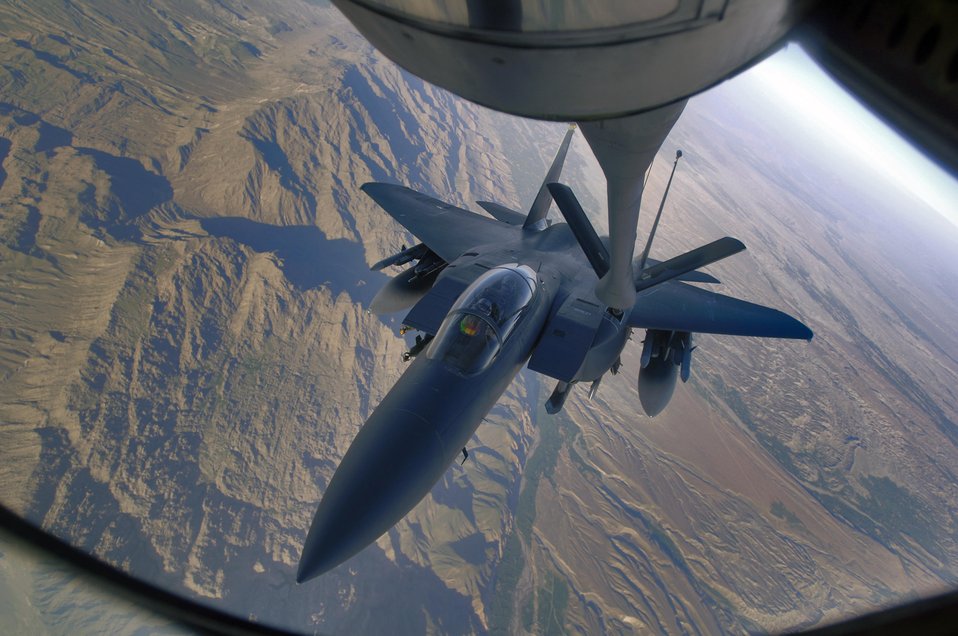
Aug. 30 airpower summary: F-15s deter enemy attack

An F-15E Strike Eagle refuels over the mountains of Afghanistan April 12, 2006. The Strike Eagle is a dual-role fighter designed to perform air-to-air and air-to-ground missions. An array of avionics and electronics systems gives the F-15E the capability to fight at low altitude, day or night, and in all weather.